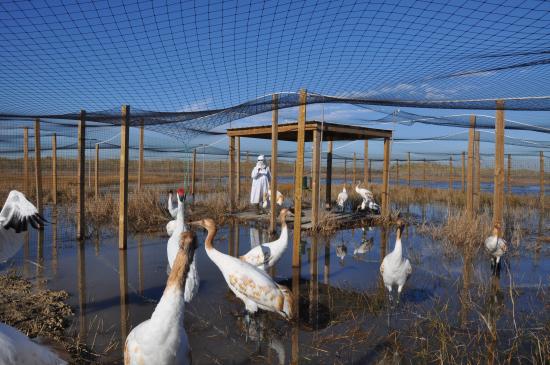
Whooping Crane Reintroduction Pen

Another view inside the top-netted reintroduction pen.